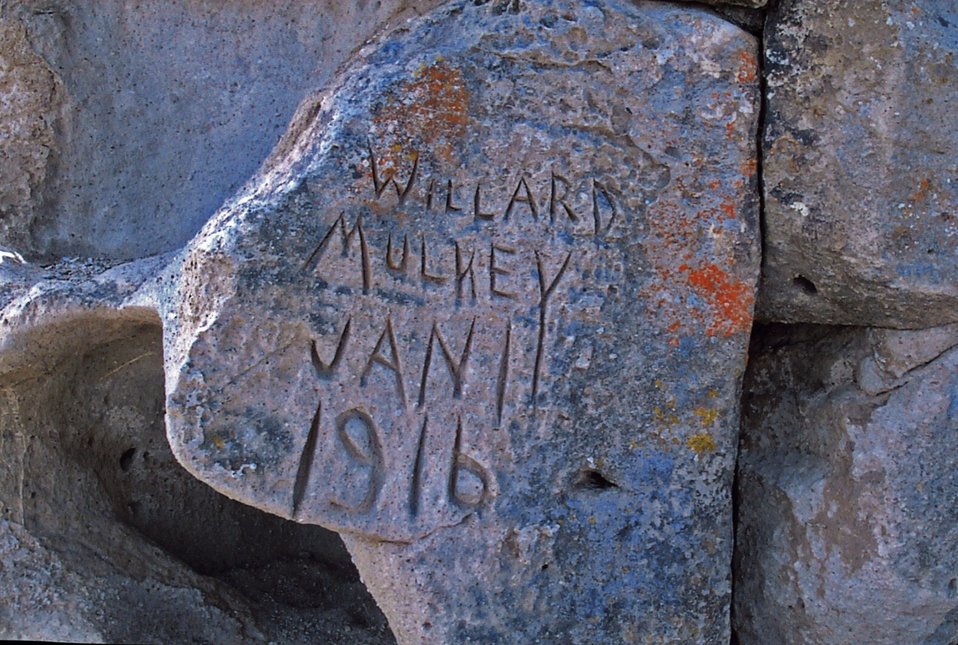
Historic carving on a rock in the Murphy Waterholes area. Kathy Mear, Lakeview Cultural 2